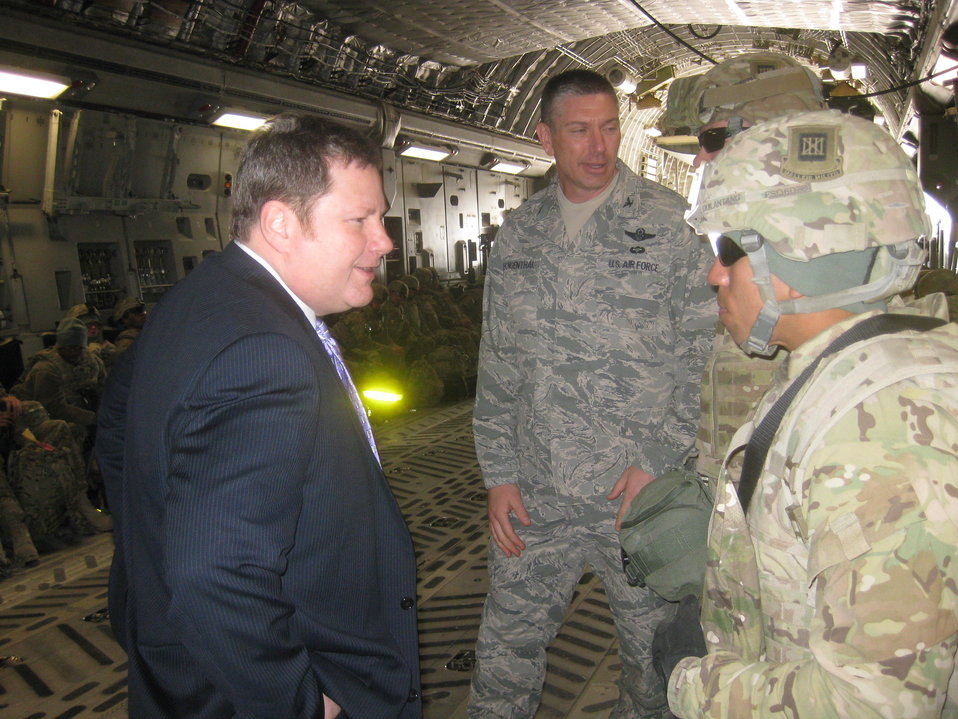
Assistant Secretary Hammer Meets With U.S. Troops

Assistant Secretary of State for Public Affairs Mike Hammer meets with U.S. troops returning from Afghanistan on a just-landed C-17 at the Transit Center at Manas International Airport on the outskirts of Bishkek, Kyrgyzstan, on March 1, 2013.